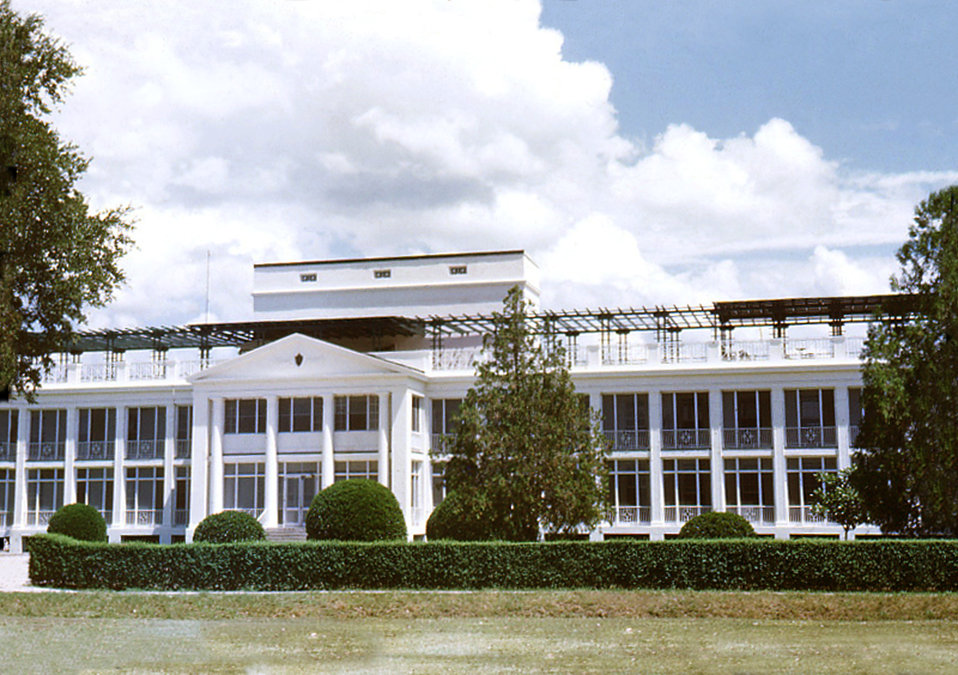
This photograph highlighted the front of the Carville, Louisiana Leprosarium's infirmary, which was the only one of its kind in the continental United States. This building was constructed by the state of Louisiana in 1894, when five men and two women with "Hansen's disease" (HD), then called leprosy, were brought by barge to an abandoned sugar plantation, known only as Indian Camp, on a bend of the Mississippi River between Baton Rouge and New Orleans. Now - more than a hundred years later - the Gillis W. Long Hansen's Disease Center, now known as the National Hansen's Disease Programs, is recognized worldwide for its achievement in Hansen's disease treatment, rehabilitation, training and education."The National Hansen's Disease Museum stands as a monument to those who battled Hansen's Disease (leprosy)--researchers and health care professionals, as well as those who suffered from the affliction from all nationalities, and belief systems."